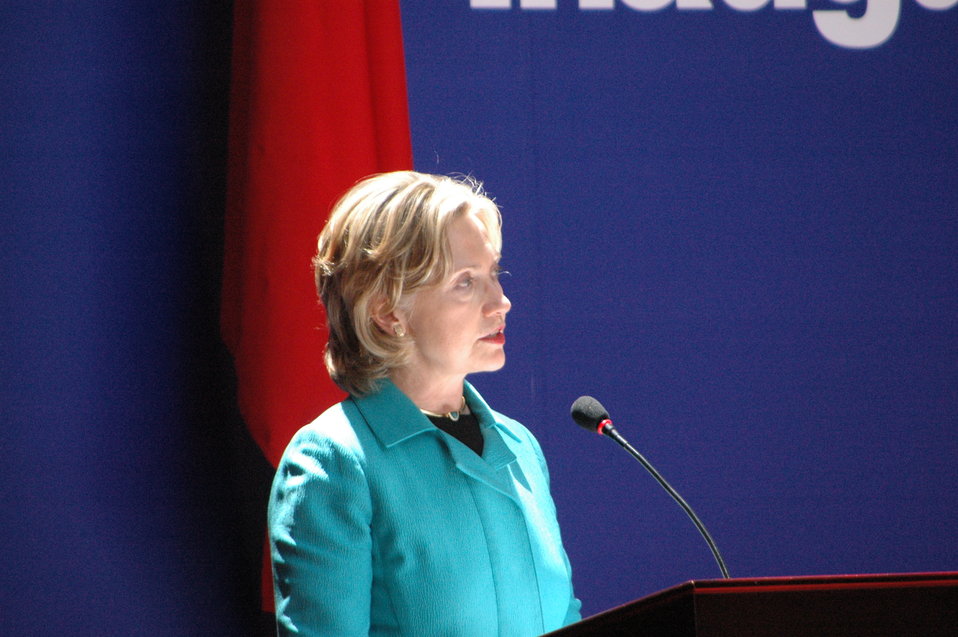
Secretary Clinton Delivers Remarks at the People-to-People Exchange Ceremony

U.S. Secretary of State Hillary Rodham Clinton delivers remarks at the U.S.-China Consultation on People-to-People Exchange ceremony at the National Center for the Performing Arts in Beijing, China, May 25, 2010.